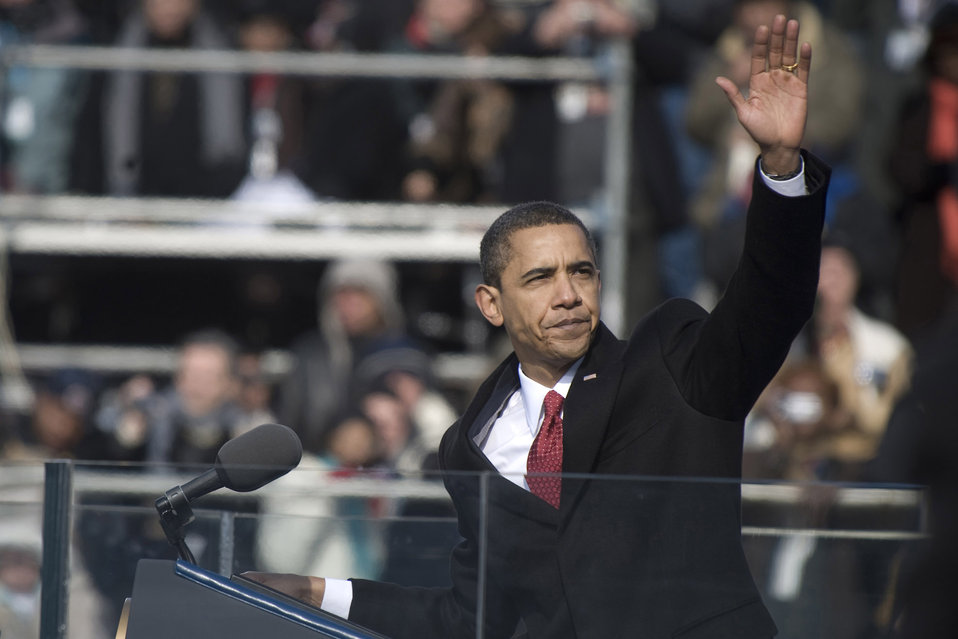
Presidential salute...

President Barack Obama waves to the crowd at the conclusion of his inaugural address Jan. 20 in Washington, D.C.